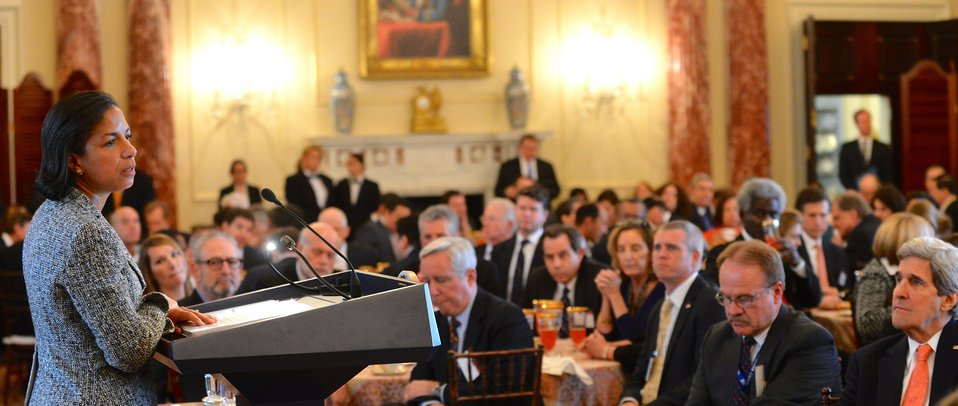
Ambassador Rice Addresses the Global Chiefs of Mission Conference

Ambassador Susan Rice, the President's National Security Advisor, addresses the Global Chiefs of Mission Conference at the U.S. Department of State in Washington, D.C., on March 11, 2014.